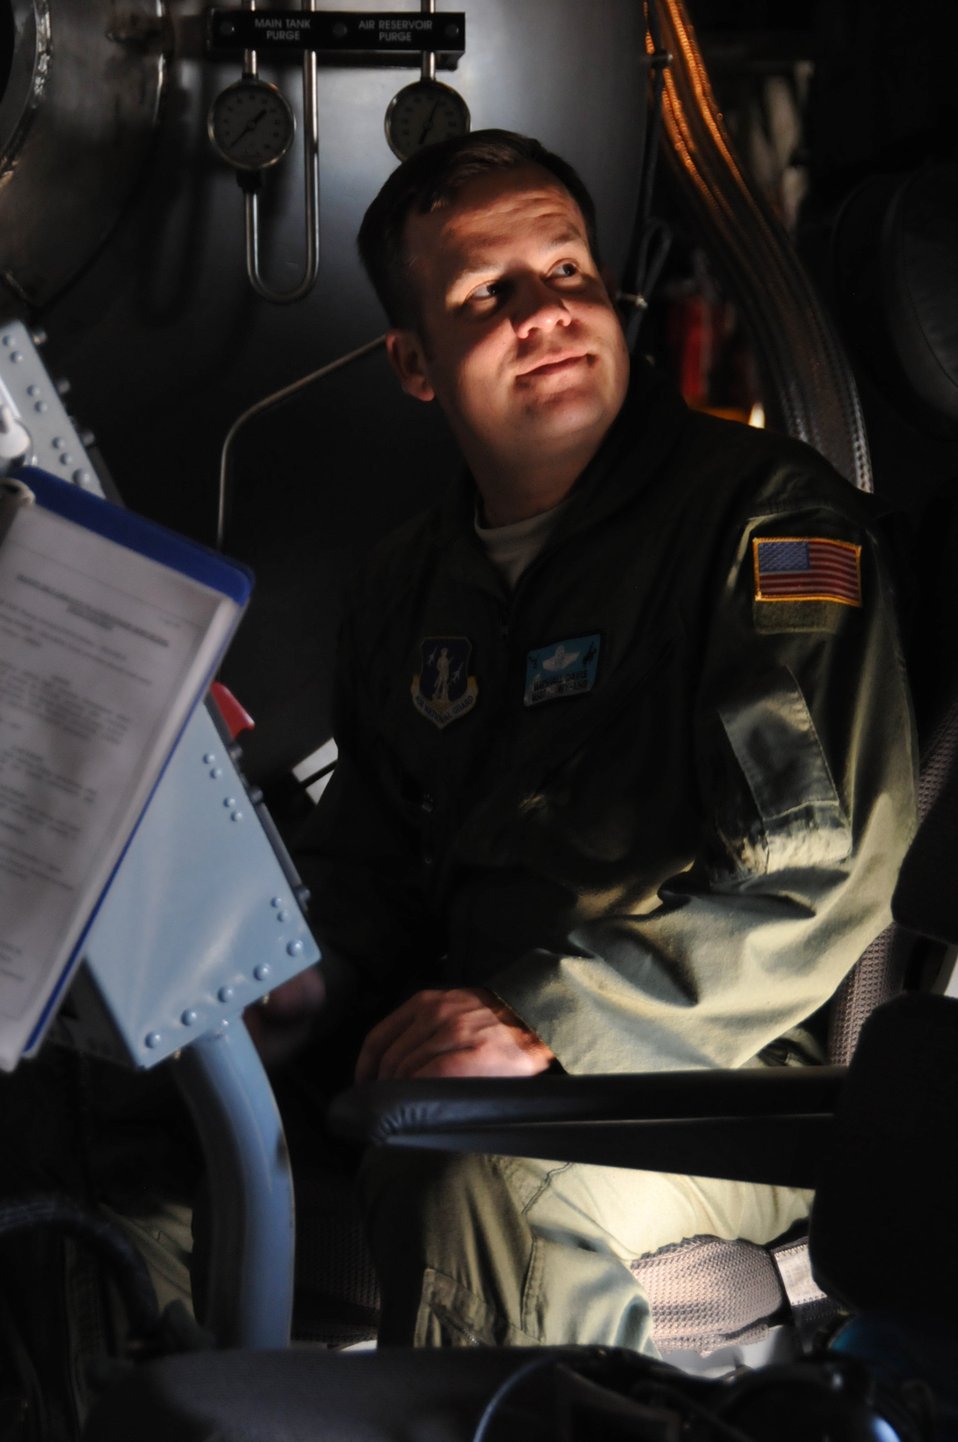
153rd Airlift Wing MAFFS

Master Sgt. Marshall Davis conducts flight preparations at Peterson Air Force Base, Colo., on June 27, 2012. Modular Airborne Fire Fighting System units from the Wyoming Air National Guard’s 153rd Airlift Wing were activated June 24, 2012, to assist in fire-suppression efforts in the Rocky Mountain region. Davis is a MAFFS-qualified loadmaster assigned to the 187th Airlift Squadron.